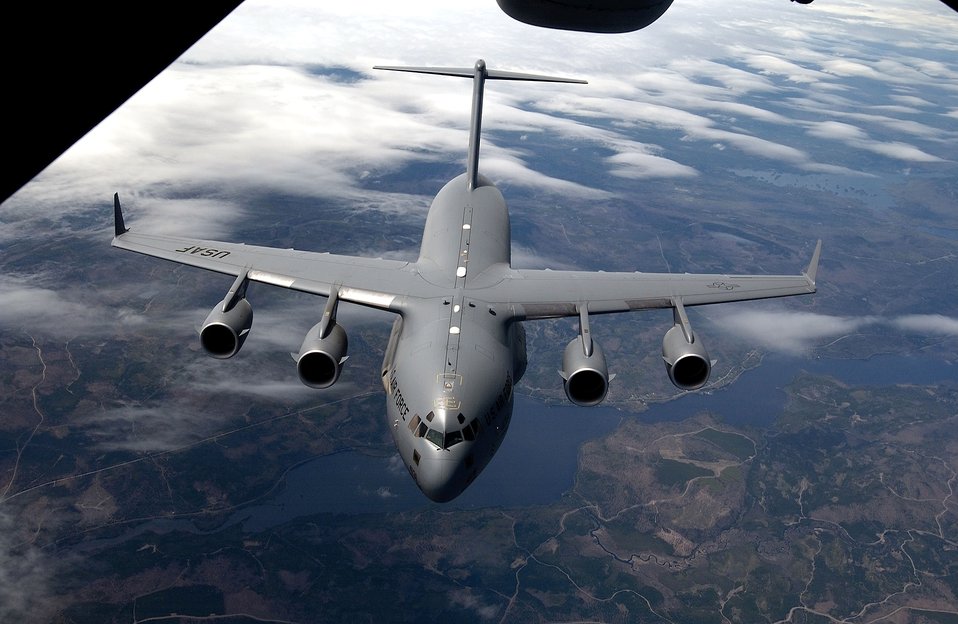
NATO to obtain C-17s

NATO members and partners are on the verge of obtaining three C-17 Globemaster IIIs, like the one shown here. The versatile transports can handle all sorts of cargo and are able to land on austere runways.